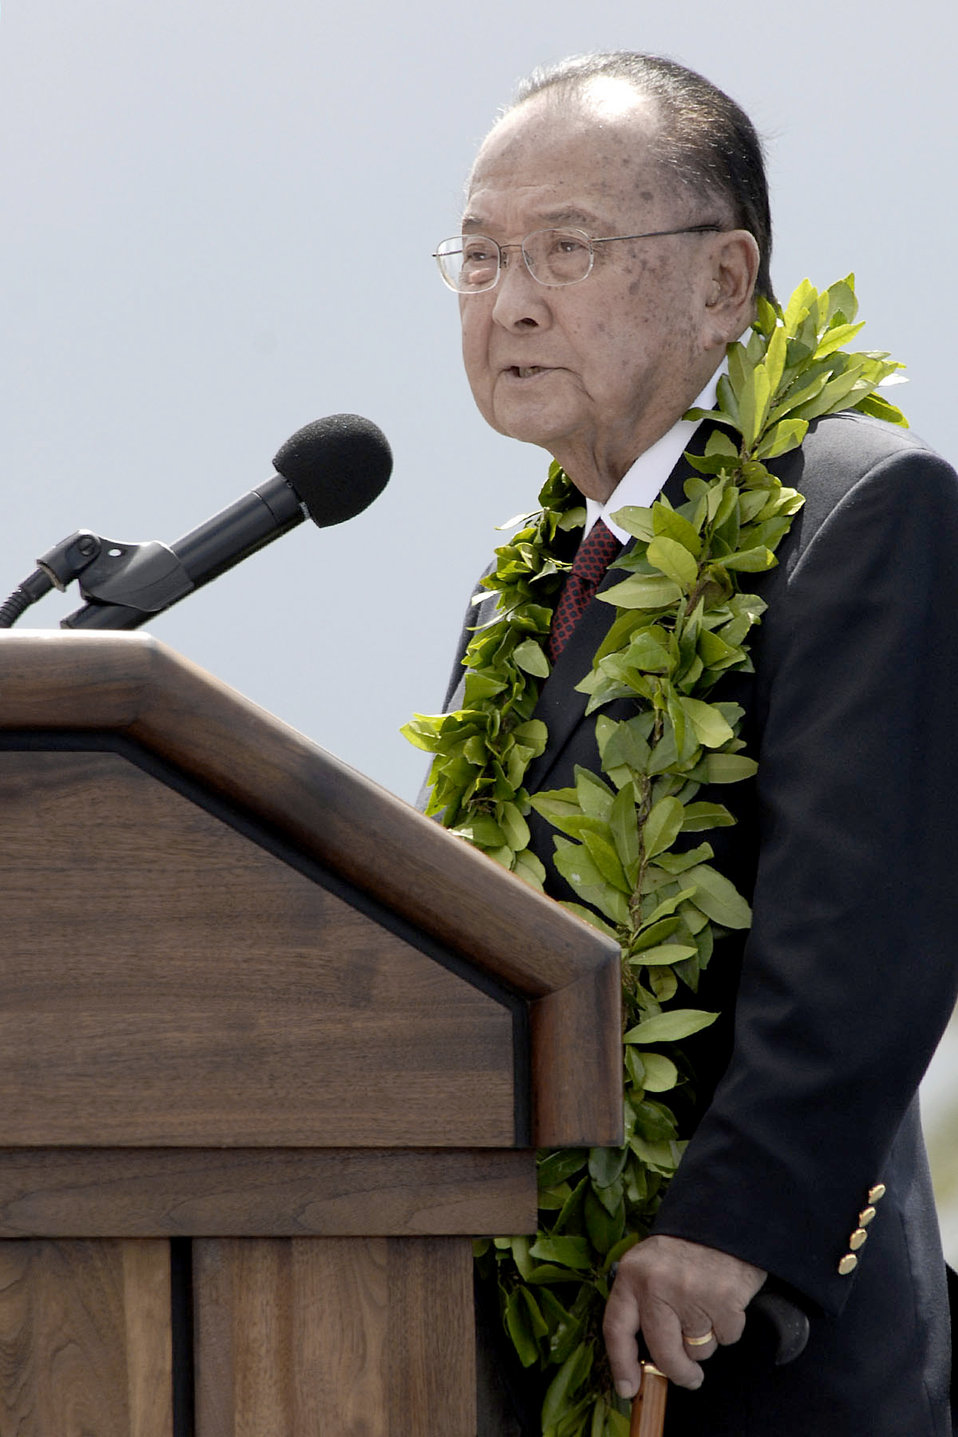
F-22 Raptors in Hawaii

Senator Daniel K. Inouye speaks at the F-22 Raptor arrival ceremony July 9, 2010, at Joint Base Pearl Harbor-Hickam, Hawaii. Senator Inouye was there to usher in a new era between the Hawaii Air National Guard and active-duty Air Force. This is the first time an F-22 associate unit will be led by the Guard.